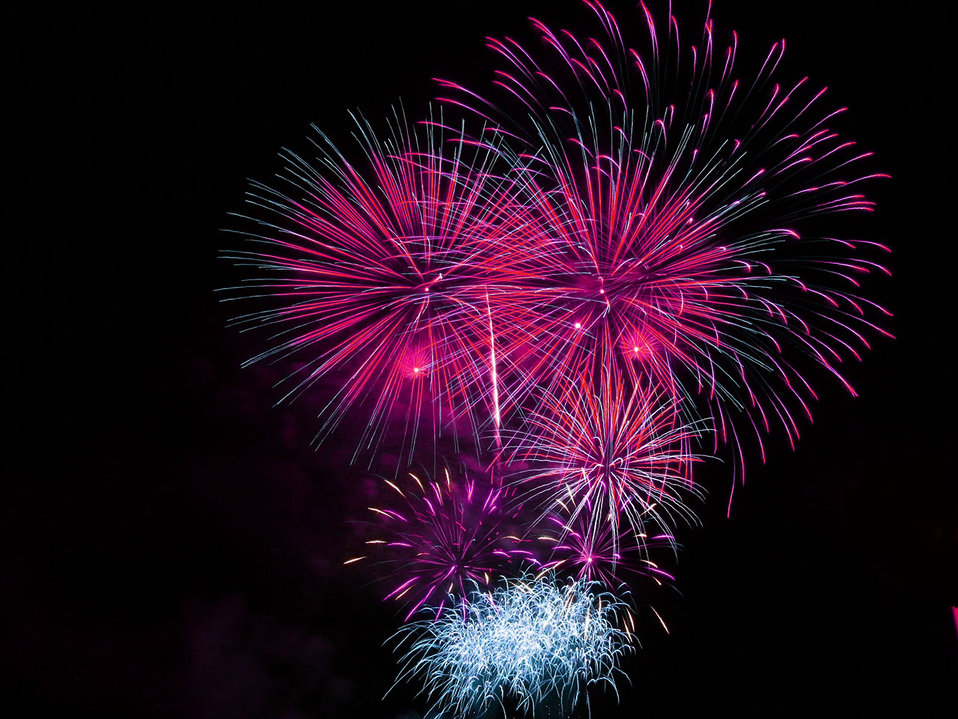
Fireworks.